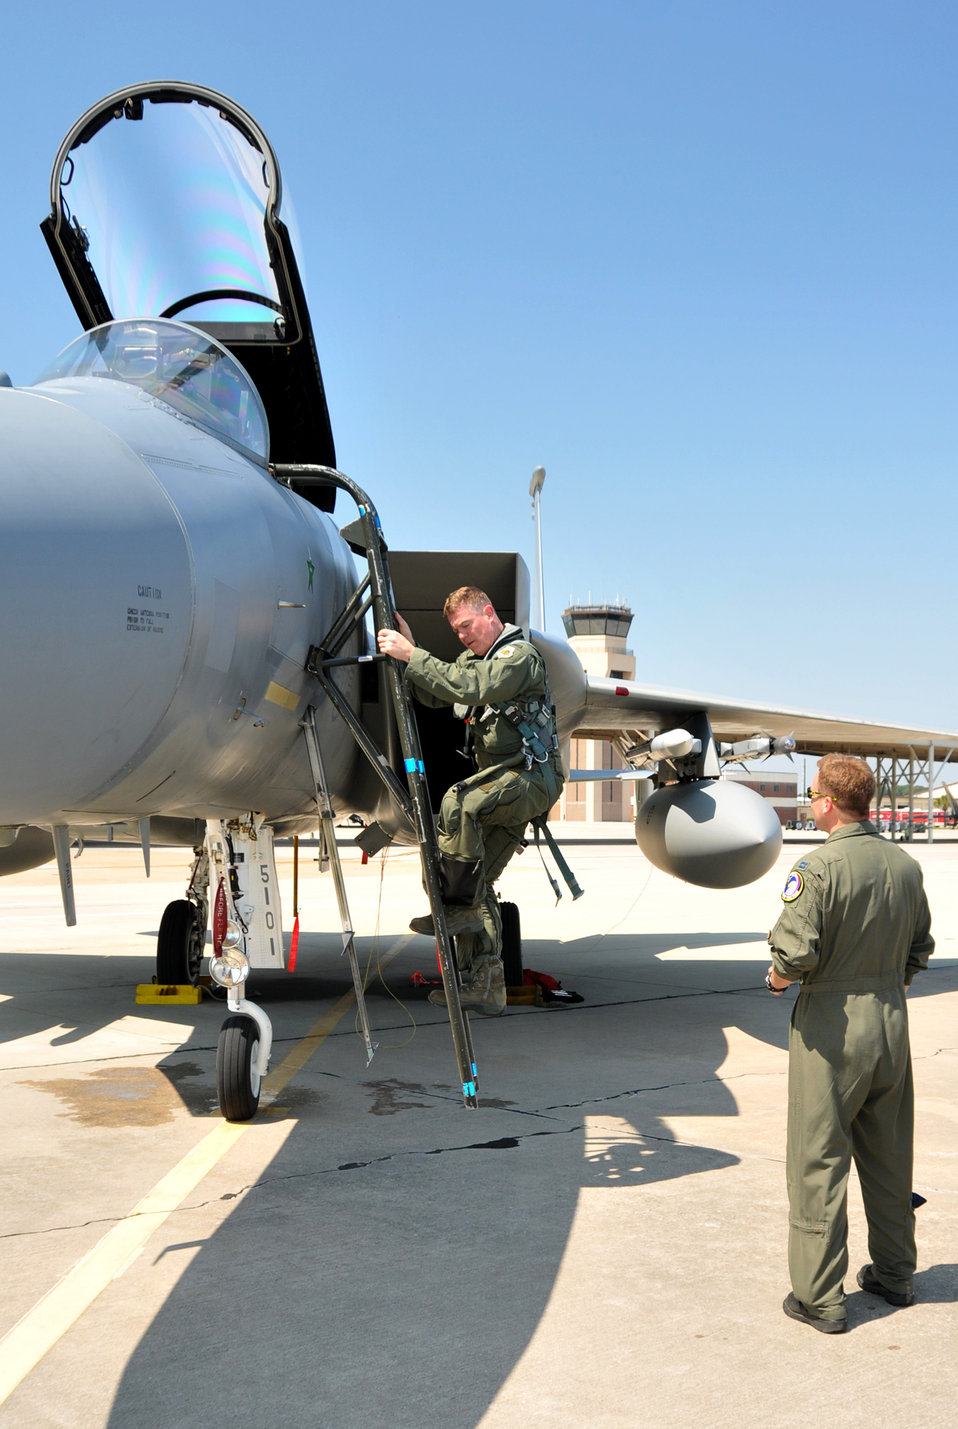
Guard unit in Florida for WSEP

Col. Robert T. Brooks climbs down from his F-15 Eagle April 9, 2011, after arriving at Tyndall Air Force Base, Fla., to participate in the Weapons System Evaluation Program there. The two-week training and evaluation program is important for ground crews to test their maintenance systems and processes while loading live munitions on the fighters. The WSEP also provides live training for the F-15 pilots to employ air-to-air missiles against remotely piloted target drones in flight. Colonel Brooks is the commander of the Massachusetts Air National Guard ‘s 104th Fighter Wing.